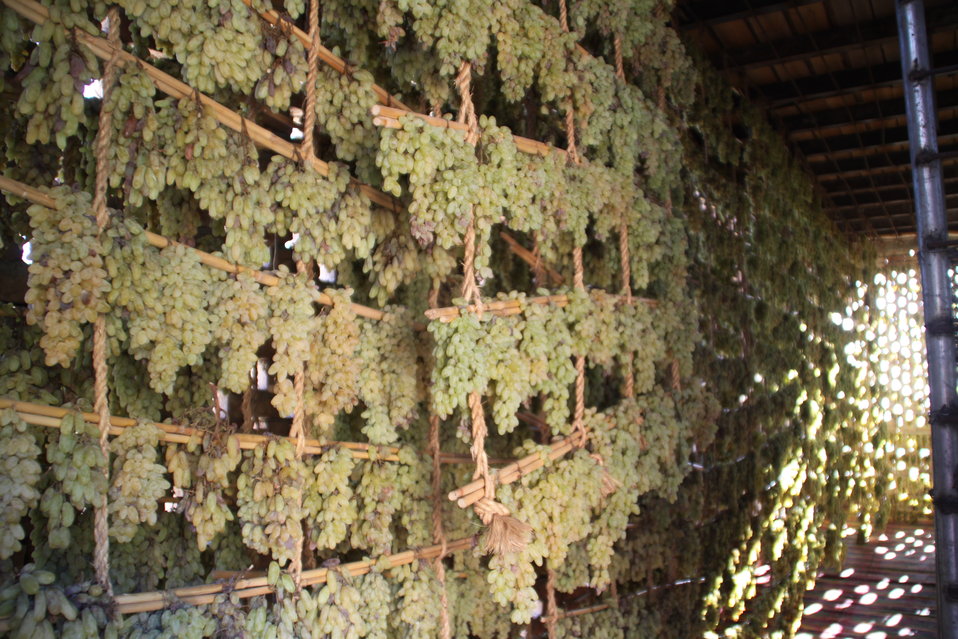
AVIPA Plus Wheat Seed Distribution 101005

US Ambassador Karl Eikenberry and USAID Acting Mission Director Kevin Brownawell joined the Minister of Agriculture, Irrigation and Livestock, H.E. Minister Mohammed Rahimi in signing a Memorandum of Understanding and distributing vouchers to area farmers for wheat and fertilizer.